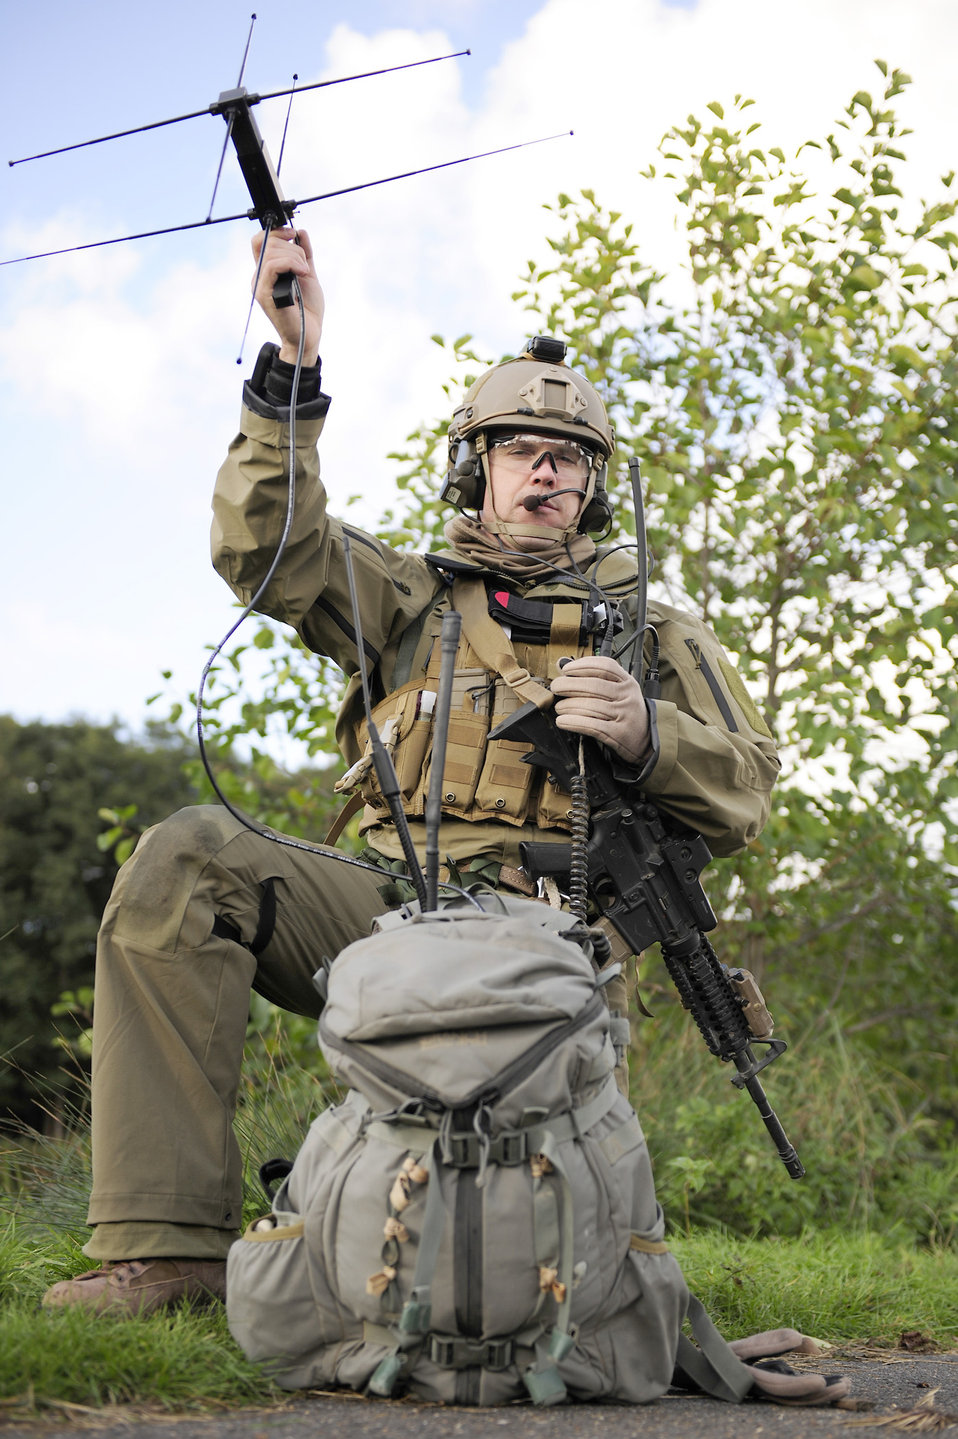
Subsurface recovery exercise

Capt. Luke Bates uses a PRC-117G man-pack radio to pass updates to the operations desk during an exercise Oct. 20, 2010, at Stanford Training Area, England. Captain Bates is a combat rescue officer with the 56th Rescue Squadron.